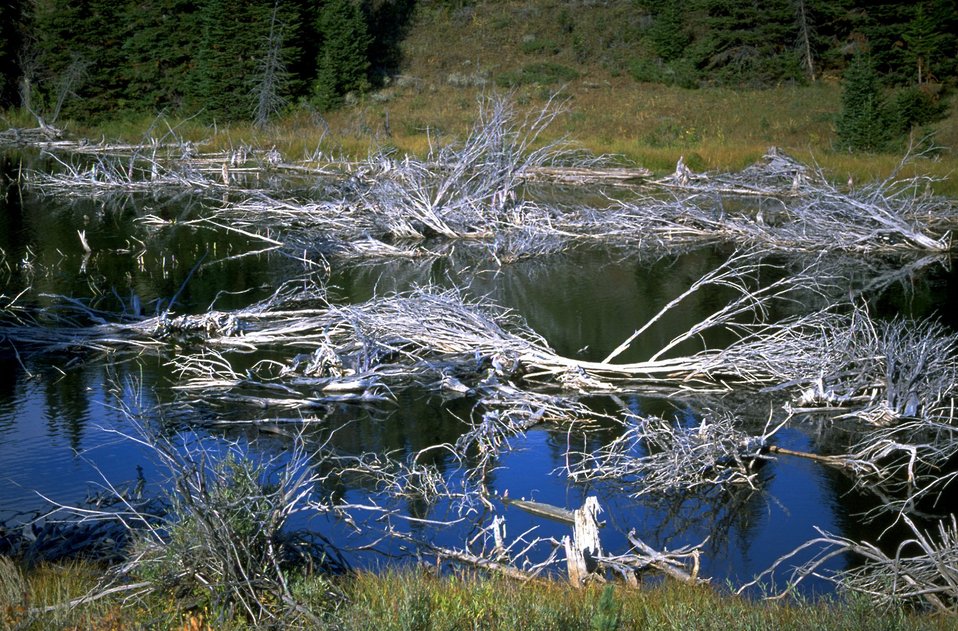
Brush in a Pond in the Axolotl Lakes Wilderness Study Area